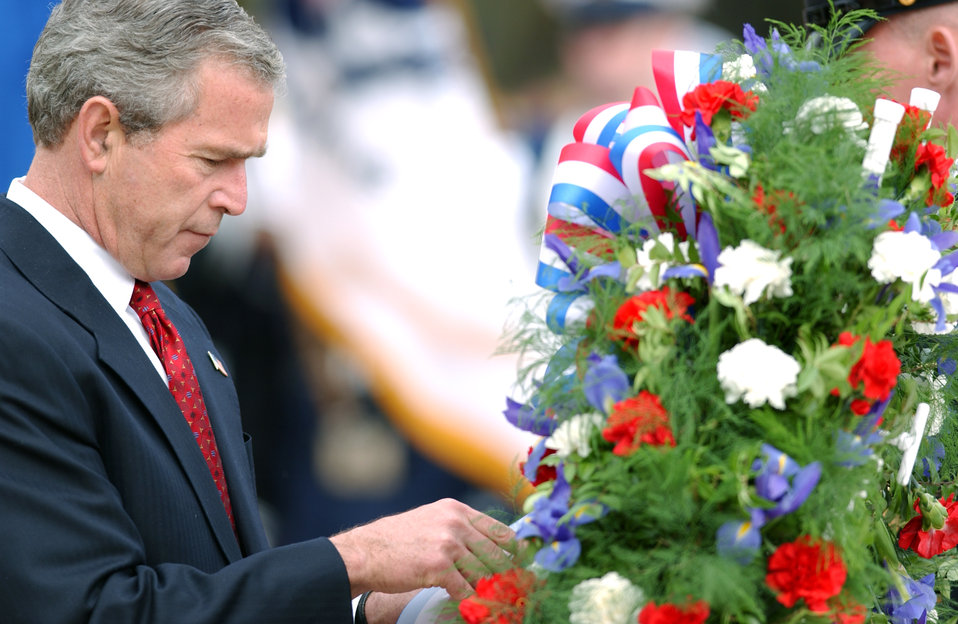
Veterans Day

ARLINGTON, Va. -- President George W. Bush lays a wreath at the Tomb of the Unknowns during the Veterans Day wreath-laying ceremony at Arlington National Cemetery on Nov. 11.